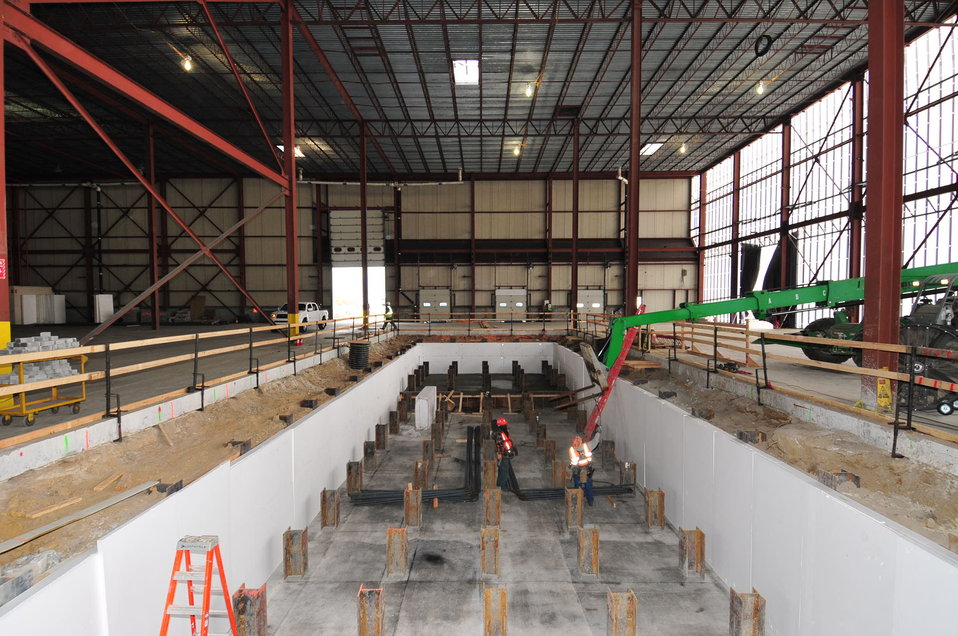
Clemson Drivetrain Test Facility

Engineers with Choate Construction preparing to pour 750 cubic yards of concrete into a channel 25 feet wide by 86 feet long by 10 feet deep, all resting on 75 steel piles, to form the 7.5 megawatt test rig foundation for the Clemson University Drivetrain Test Facility.